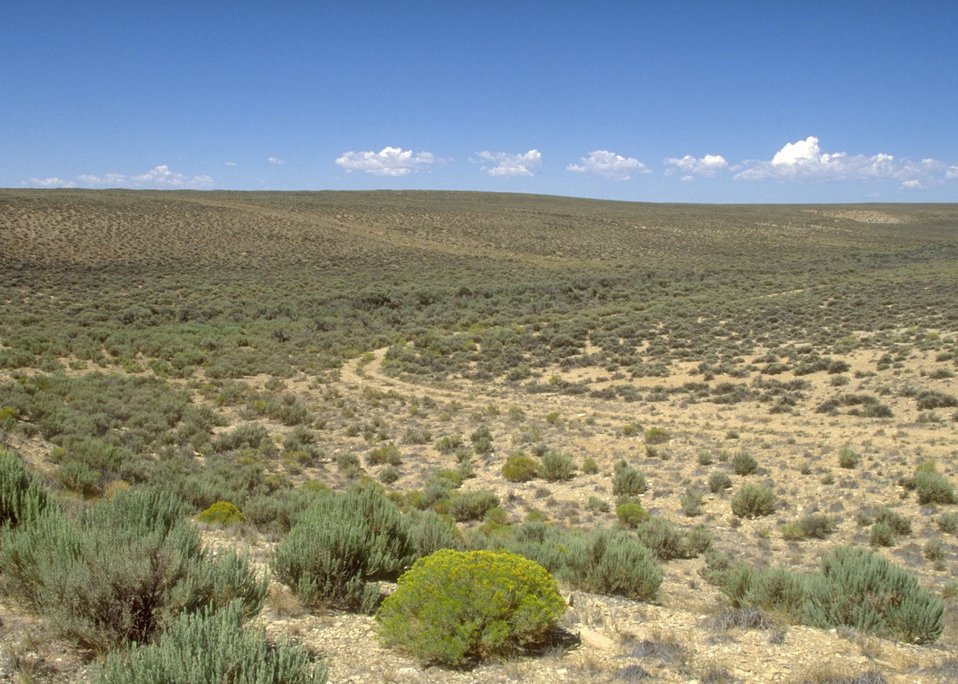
Simpson's Hollow where skirmish occurred between US Army and Mormon militia on the Mormon Trail, Rock Springs Field Office.